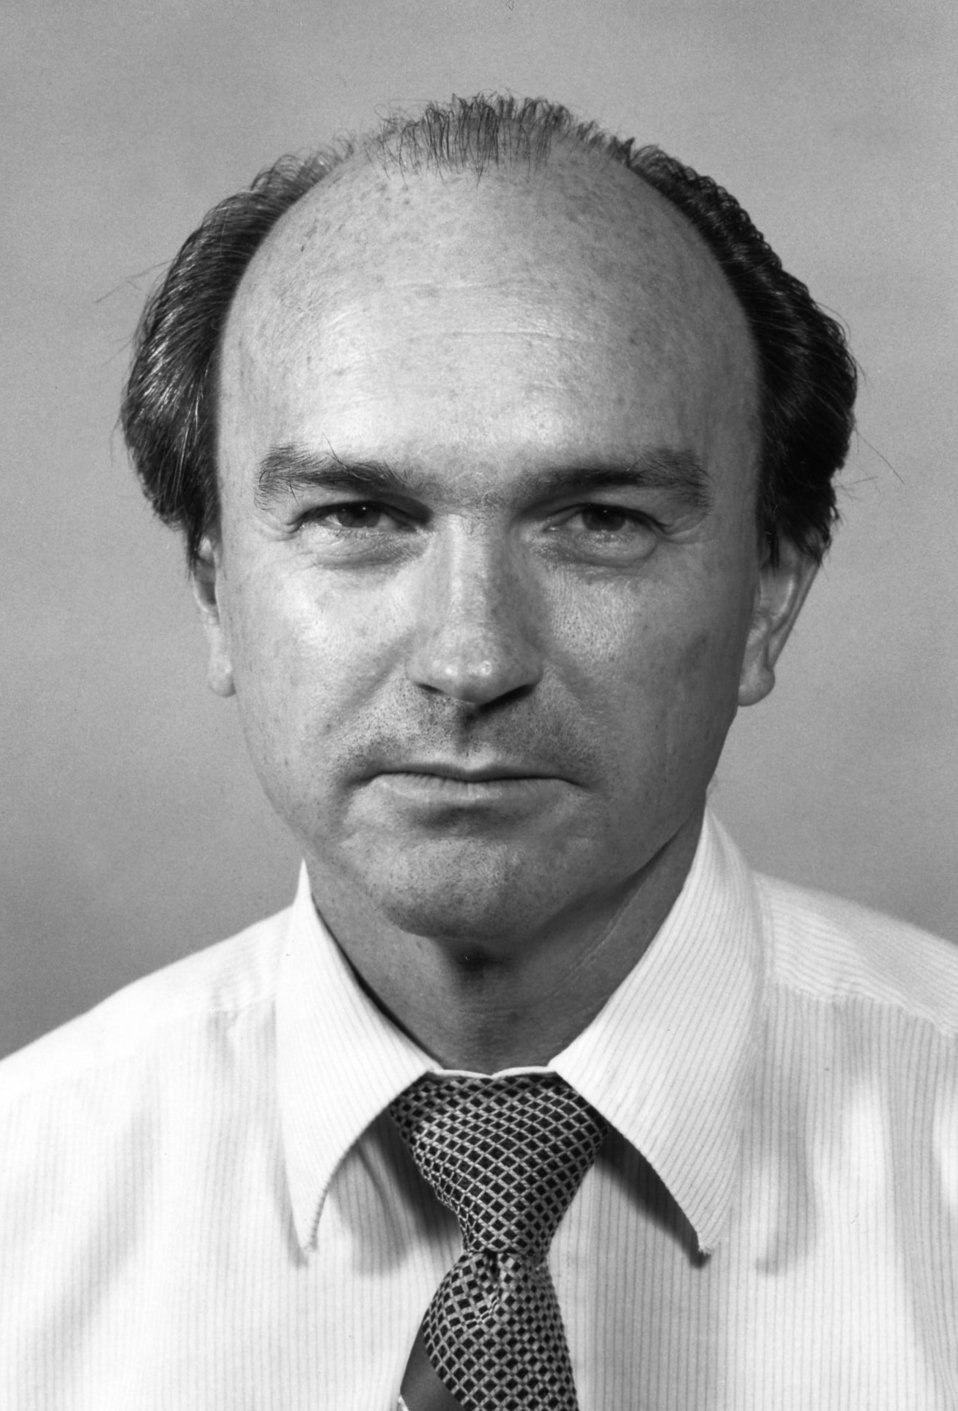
This is a portrait photograph of Walter Dowdle, Ph.D., a senior consultant to the World Health Organization (WHO) Polio Eradication Program, and a member of the Task Force for Child Survival and Development.